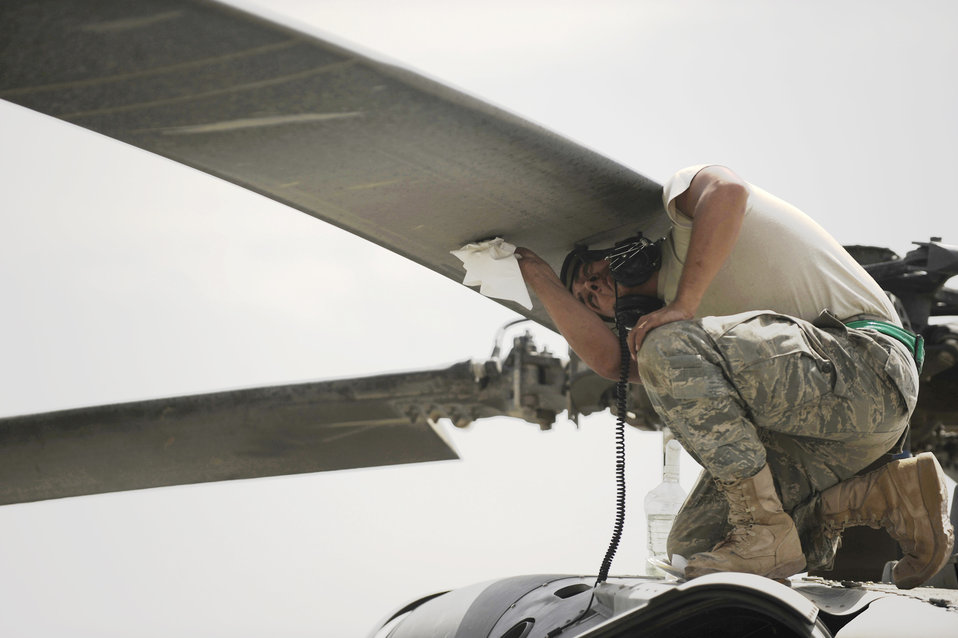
Clean as a whistle

Senior Airman Robert Fabela cleans the rotors of an HH-60 Pave Hawk after the aircrew returned from an alert mission April 16, 2010, at Camp Bastion, Afghanistan. Airman Fabela is a crew chief assigned to the 451st Expeditionary Aircraft Maintenance Squadron helicopter maintenance unit.